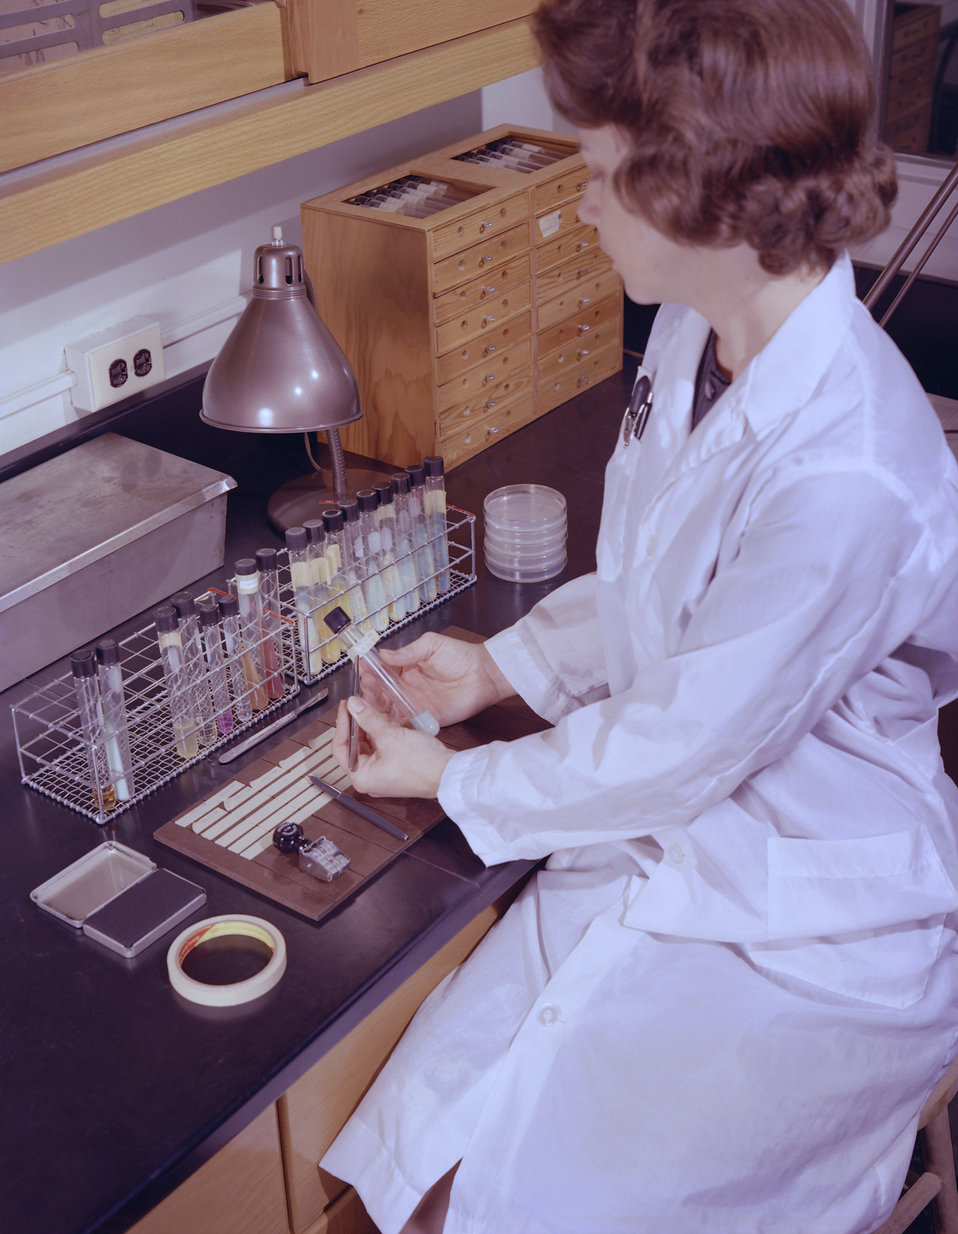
This historic 1963 photograph depicted laboratorian, Charlotte Patton, as she was labeling vials containing Lowenstein-Jensen growth medium (LJ medium) for subsequent culture studies. LJ medium is commonly used when culturing Mycobacterium spp., including Mycobacterium tuberculosis.